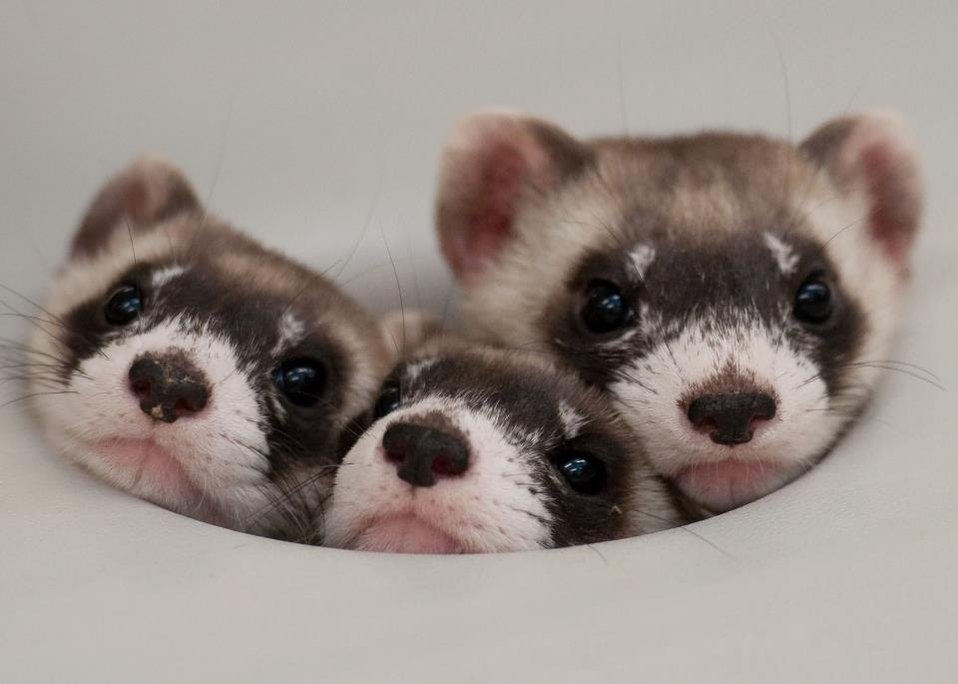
Make Room for Me!

Credit: Kimberly Tamkun / USFWS

Photo Contest Entry #199